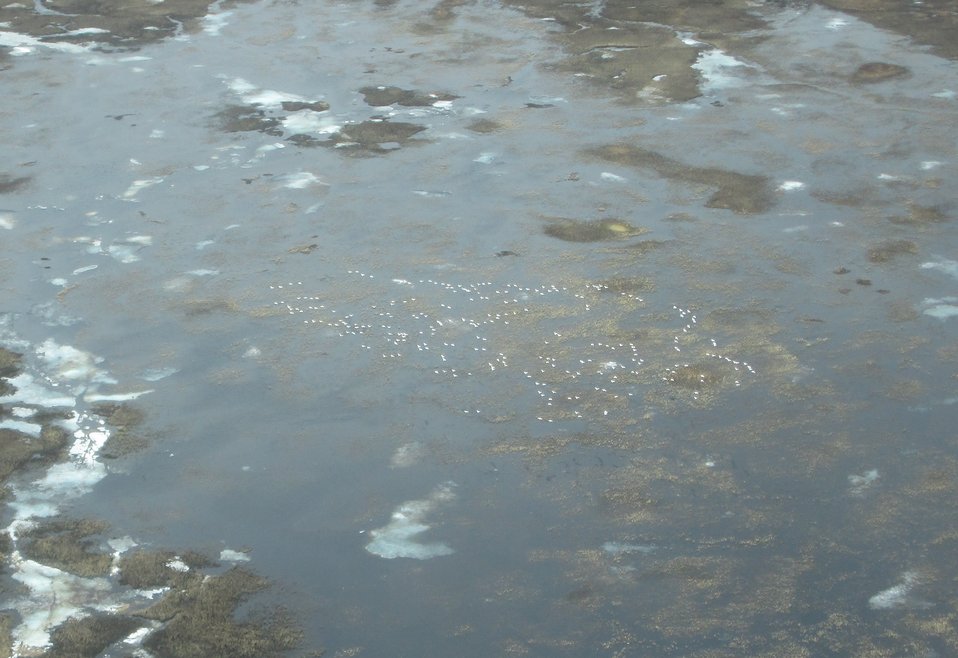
Snow Goose Telemetry

Many of the breeding Wrangel Island (located in northern Russia) snow geese winter in Washington State. During their fall/spring migrations they have been known to stop on Yukon-Kuskokwim Delta (YKD). In the winter 2013 the Washington Department of Fish & Wildlife attached transmitters to a handful of the wintering snow geese to monitor movements, stop over sites, etc. It is known that the birds use the YKD as a stop-over site but exact locations of use and size of the the flocks were unknown. In May of 2013 we flew a survey to document number of snow geese on the Yukon-Kuskokwim Delta and where they were found.
USFWS Yukon Delta NWR